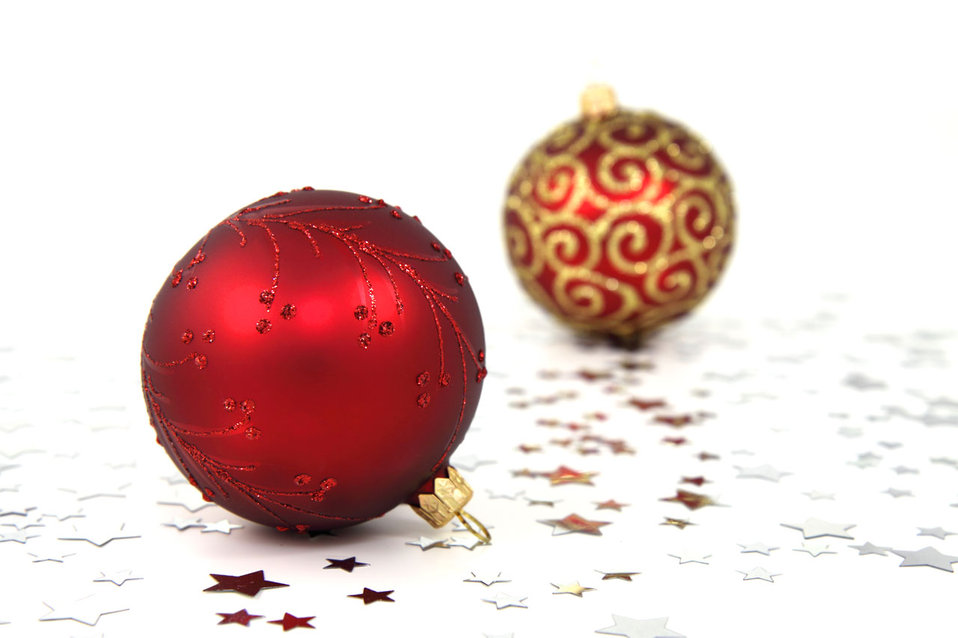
Christmas baubles

Red christmas bauble with a golden decorated one in the background.